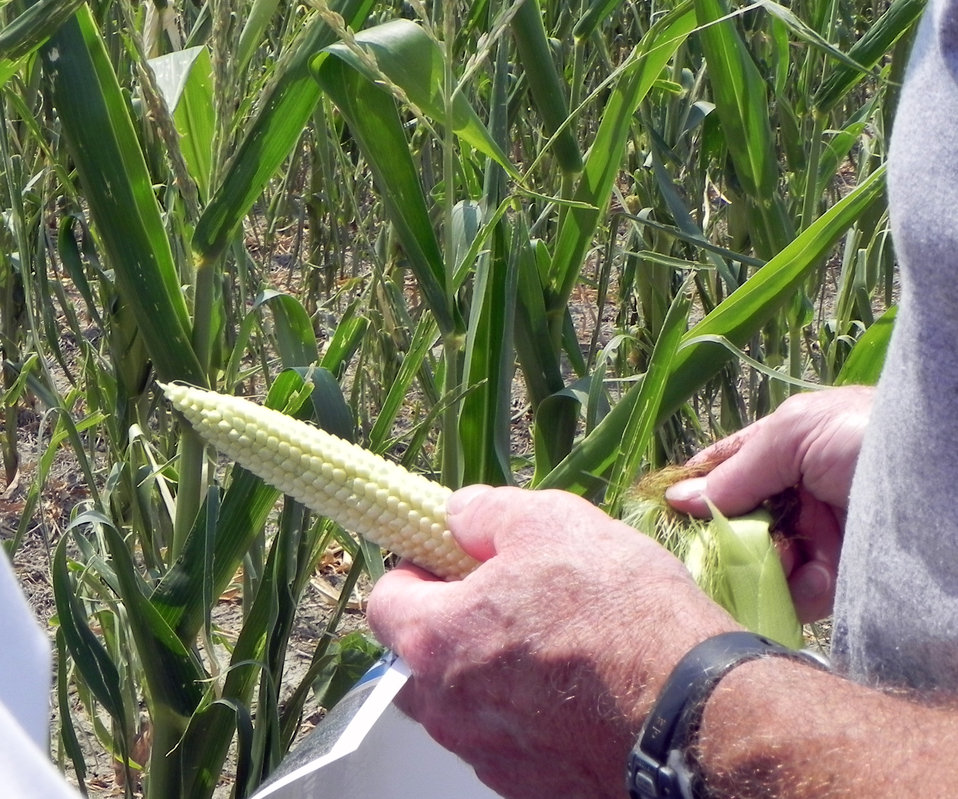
Farmer Doug Goyings examines the drought-damaged corn on his farm in Paulding County, OH on Tuesday, July 17, 2012. The U.S. Drought Monitor currently reports that 61 percent of the continental United States is in a moderate to exceptional drought.